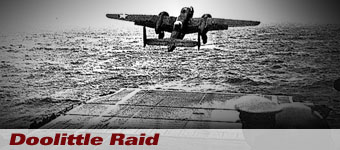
Titan II - Project Gemini history spotlight graphic .